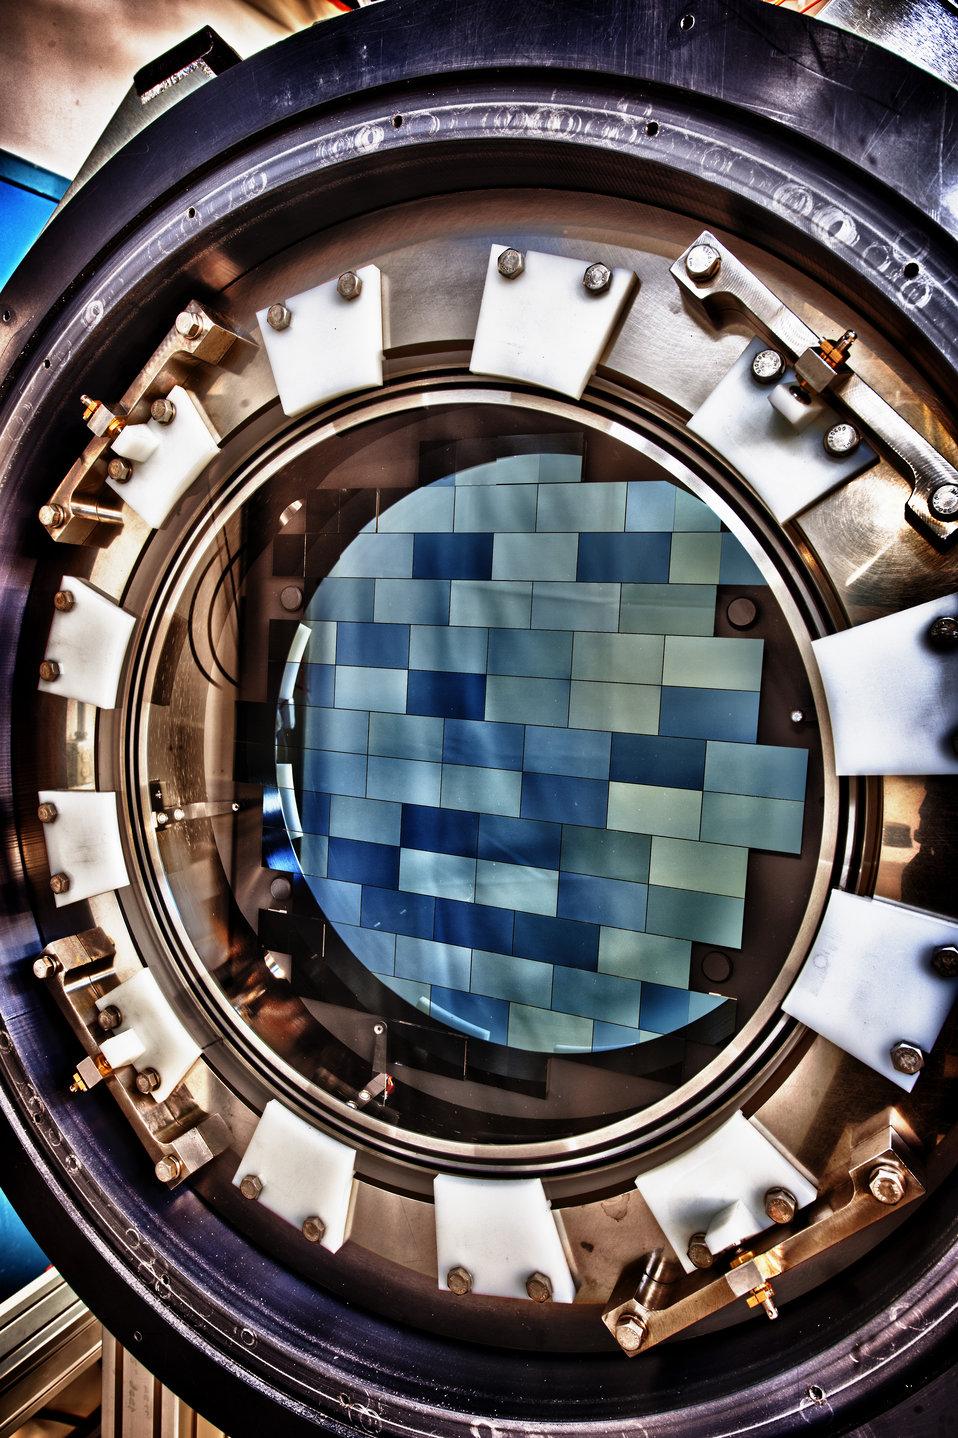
The Dark Energy Camera features 62 charged-coupled devices (ccds), which record a total of 570 megapixels per snapshot.